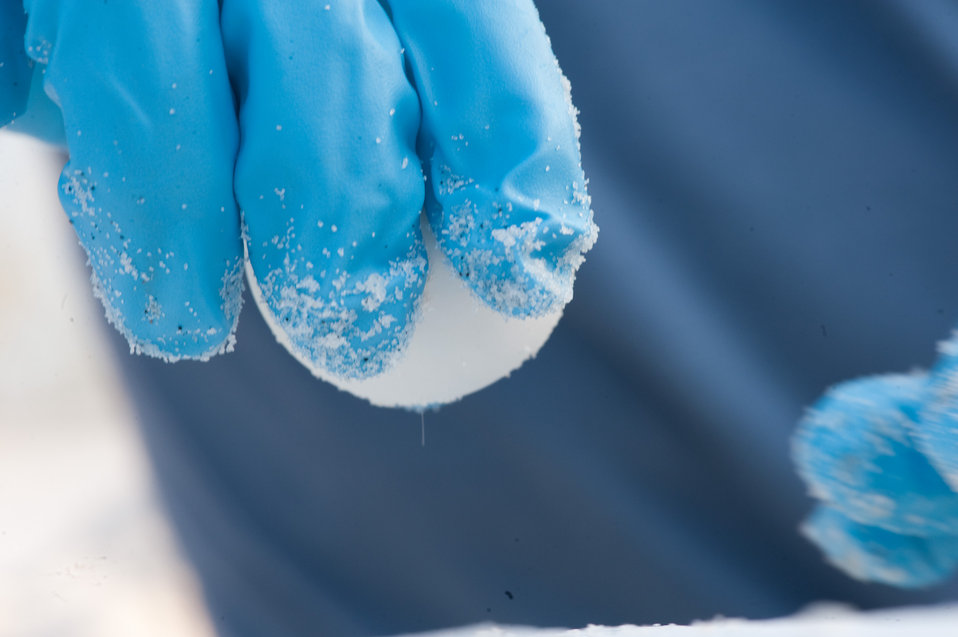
Turtle Eggs avoid Gulf Oil Danger

Kelley Anderson-Nunley very slowly carries a Loggerhead sea turtle egg to a Styrofoam cooler lined with white sand at Eglin Air Force Base, Florida, on August 9, 2010. Ms. Anderson-Nunley is a contract wildlife technician with Colorado State University. The gloves prevent skin oil from coming in contact with the egg. The 112 eggs of this nest will all get the gentle slow-motion lift from their beach nest. Because of the critical attachment of the embryo to the inside of the eggshell, the eggs must be gently lifted with out tilting or rotating, the egg. With equal care the transportation to the Atlantic coast is equally critical. At a controlled climate facility, they will be allowed to hatch in the cooler. Wildlife technicians will then release them into the ocean.